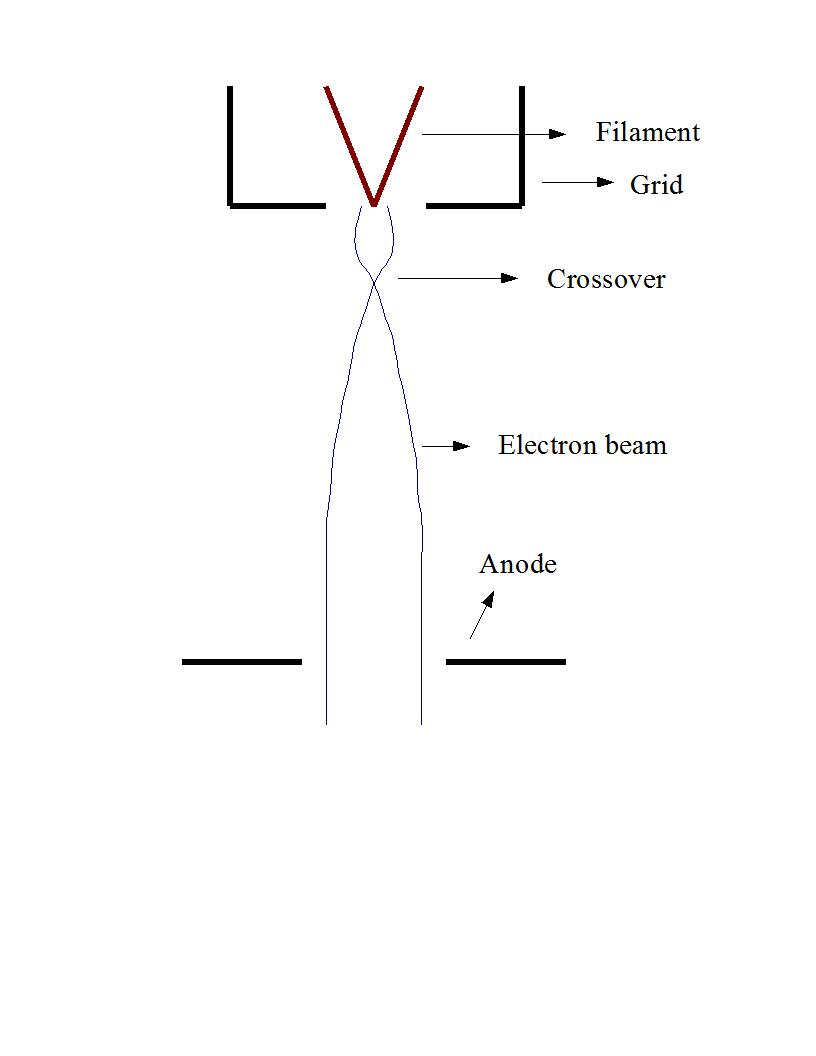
The path of the electron beam in a gun.